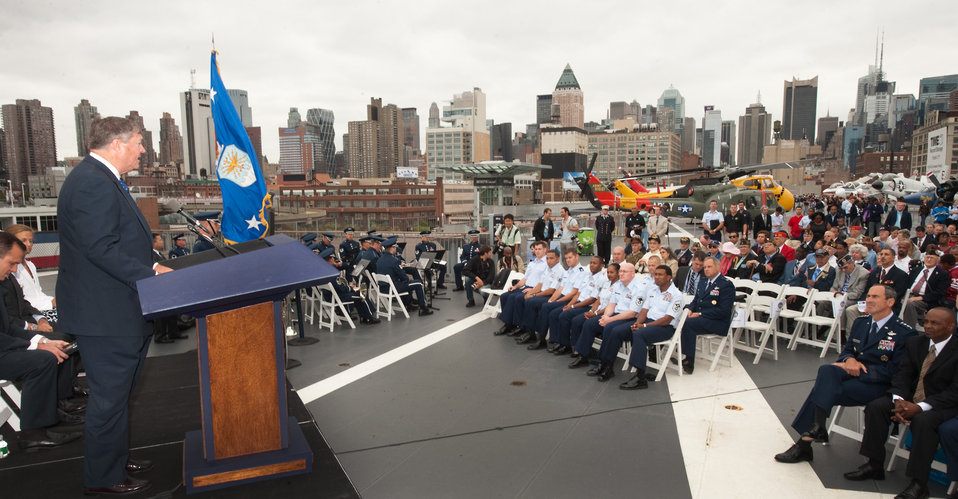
Air Force Week New York City Proclamation Ceremony

Secretary of the Air Force Michael Donley speaks during the Air Force Week New York City proclamation ceremony at the Intrepid Sea, Air & Space Museum Aug. 24, 2010, in New York. The event was highlighted by a six-ship flyover by the Air Force aerial demonstration team, the Thunderbirds.